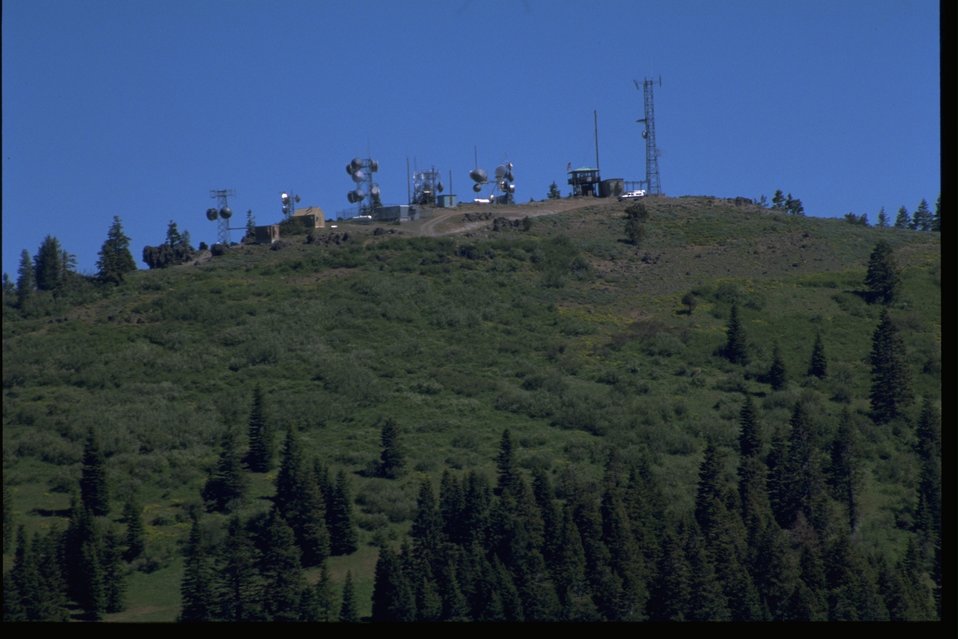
Communications equipment on Soda Mountain Summit.